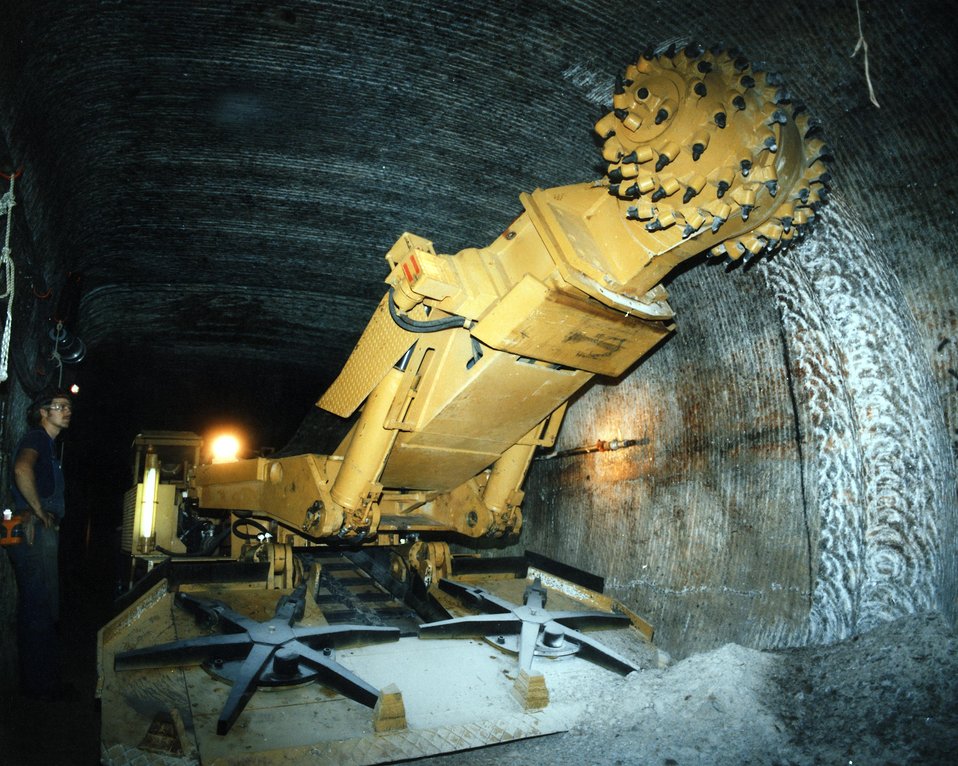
UNDERGROUND SHOT OF CONTINUOUS MINING MACHINE.

THE WASTE ISOLATION PILOT PLANT IS A DOE RESEARCH AND DEVELOPMENT FACILITY FOR DEMONSTRATING THE SAFE DISPOSAL OF TRANSURANIC RADIOACTIVE WASTES. TEST SHAFTS HAVE BEEN DRILLED TO A DEPTH OF 2,100 FEET. THE SHAFTS, ONE 6 FEET IN DIAMETER AND THE OTHER 12 FEET IN DIAMETER, PROVIDE AN ENTRY PASSAGE AND VENTILATION TO THE UNDERGROUND SALT ROCK FORMATION THAT IS BEING TESTED TO DETERMINE ITS SUITABILITY FOR RADIOACTIVE WASTE STORAGE. THE CONTINUOUS MINING MACHINE, WEIGHING 45 TONS, MINES SALT UNDERGROUND AT WIPP AT THE RATE OF 300 TONS PER HOUR. THE HEAD OF THE MACHINE CUTS WITH TUNGSTEN CARBIDE BITS. IT CAN BE RUN BY ONE OPERATOR AND ONE SUPPORT PERSON. THE MINER IS SELF-LOADING; THE GATHERING STARS ON THE FRONT APRON FEED THE SALT ONTO AN INTERNAL CONVEYOR BELT THAT HAULS IT TO THE BACK OF THE MACHINE AND DUMPS IT INTO AN UNDERGROUND HAULAGE TRUCK.